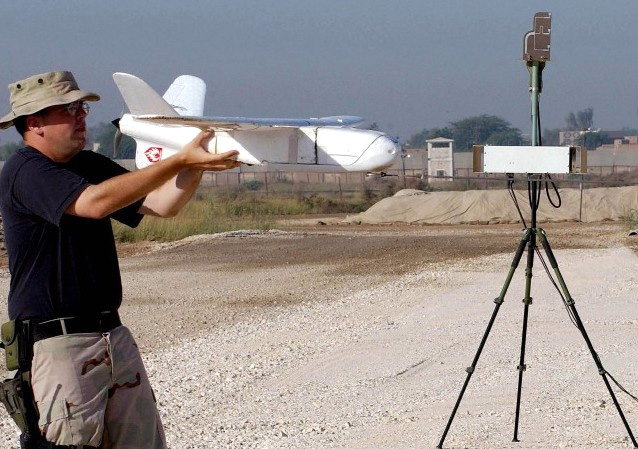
AF nominates Desert Hawk for Collier Trophy

HANSCOM AIR FORCE BASE, Mass. -- A security forces airman from Hanscom Air Force Base, Mass., prepares a Desert Hawk for launch. The unmanned aerial vehicle is the Air Force nominee for the 2002 Collier Trophy.